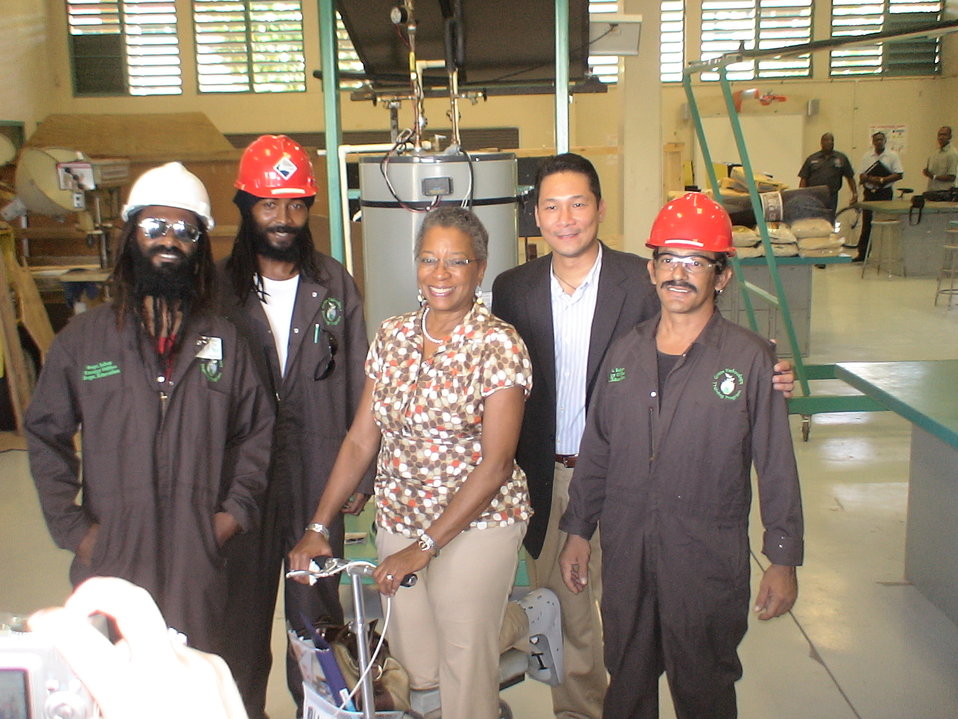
Going Green in the Virgin Islands 3

Delegate Donna Christian and Under Secretary of Interior Babuta with students who described the training program to the dignitaries.